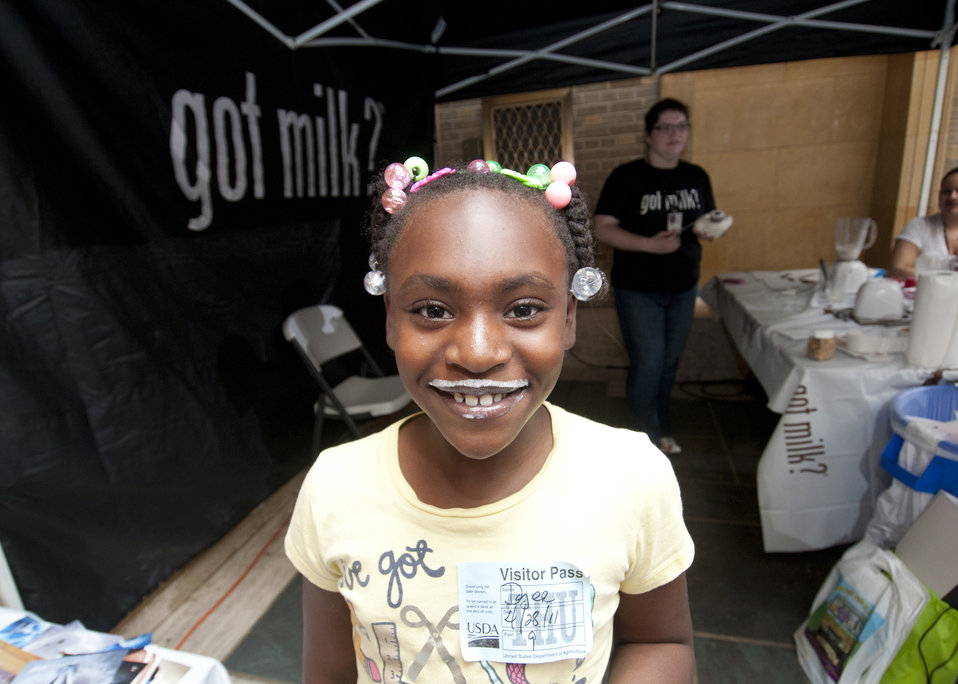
The U. S. Department of Agriculture (USDA) held its annual “Take Your Child to Work Day” on the patio of the Whitten Building, in Washington, DC, on Thursday, April 28, 2011. The program is designed to introduce young people to USDA’s wide range of responsibilities and services. Nevaeh Dyer models a milk mustache at Agricultural Marketing Service exhibit at Agriculture’s “Take Your Child to Work Day” event.